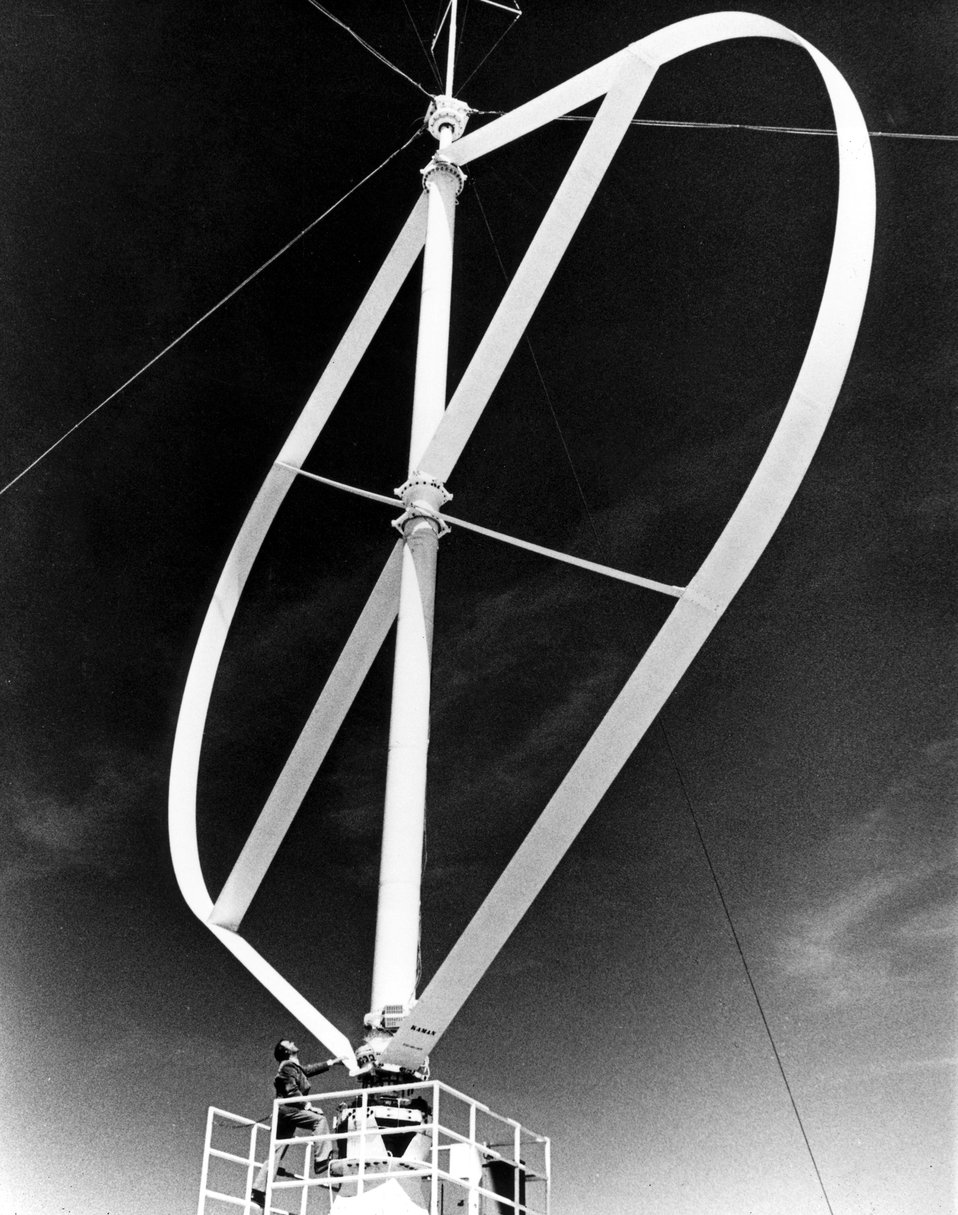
A seven-story-high vertical axis wind turbine generator has been built at the Energy Research and Development Administration's (ERDA) Sandia Laboratories, Albuquerque, New Mexico. c. 1977